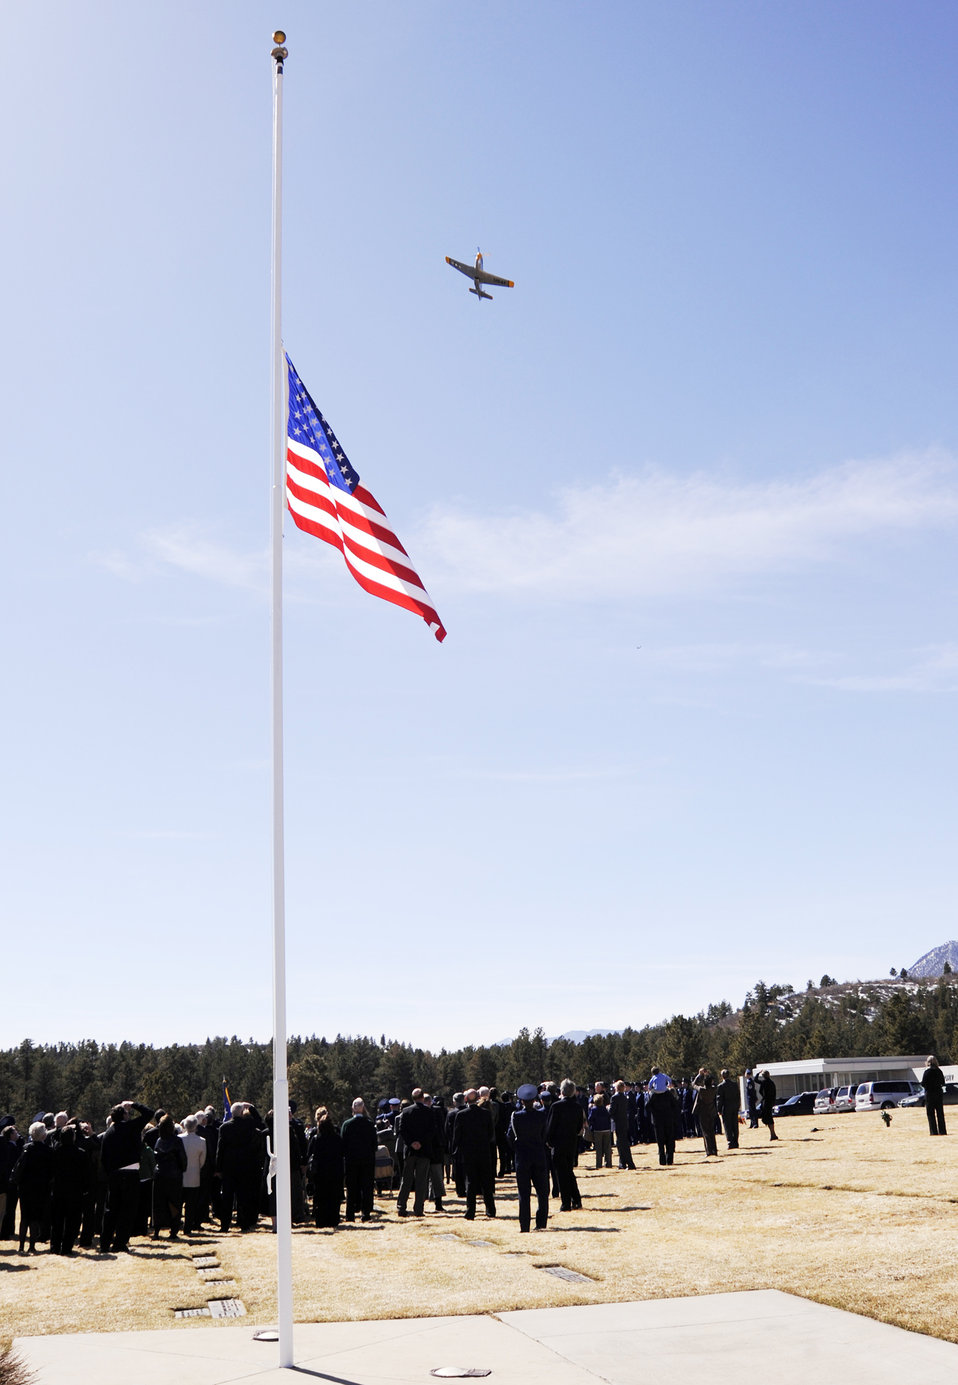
General Clark honored with service

A P-51D Mustang piloted by Joseph Thibodeau flies over the graveside service of Lt. Gen. A.P. Clark after the funeral mass March 17, 2010, at the U.S. Air Force Academy's Cadet Chapel in Colorado. General Clark, who was the Academy's sixth superintendent from Aug. 1, 1970 to July 31, 1974, was a 1936 graduate of West Point and went on to a flying career after graduation. He spent 33 months as a prisoner of war after getting shot down flying a British Spitfire over Abbeville, France in July 1942.